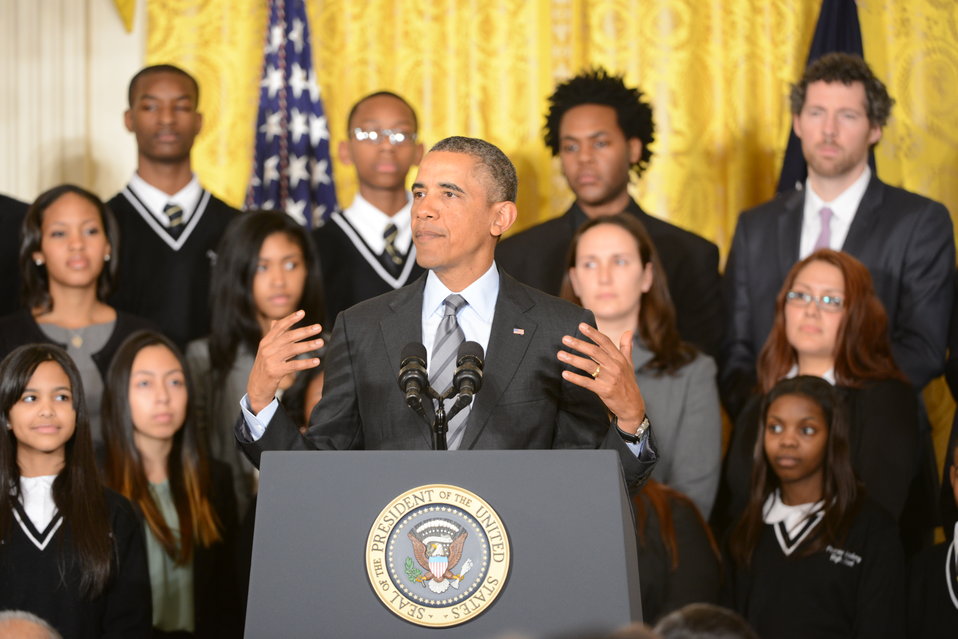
President Barack Obama announces the first five “Promise Zones,” located in San Antonio, TX, Philadelphia, PA, Los Angeles, CA, Southeastern Kentucky, and the Choctaw Nation of Oklahoma.